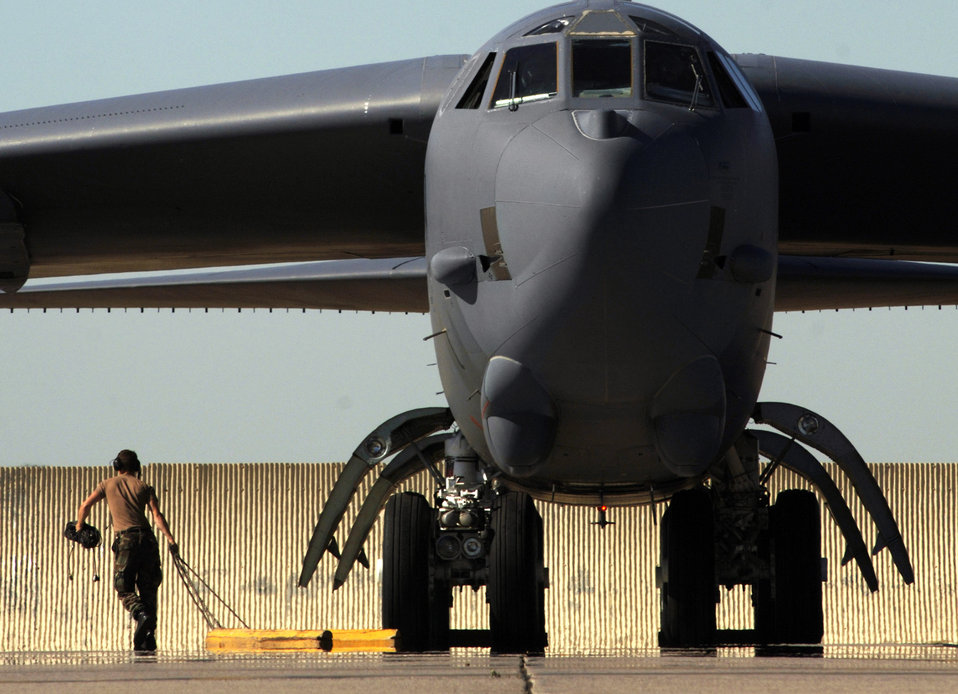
B-52 Stratofortress ages like wine

A B-52 Stratofortress is readied for take-off from Minot Air Force Base, N.D., Aug. 21. The bomber is with the 5th Bomb Wing.